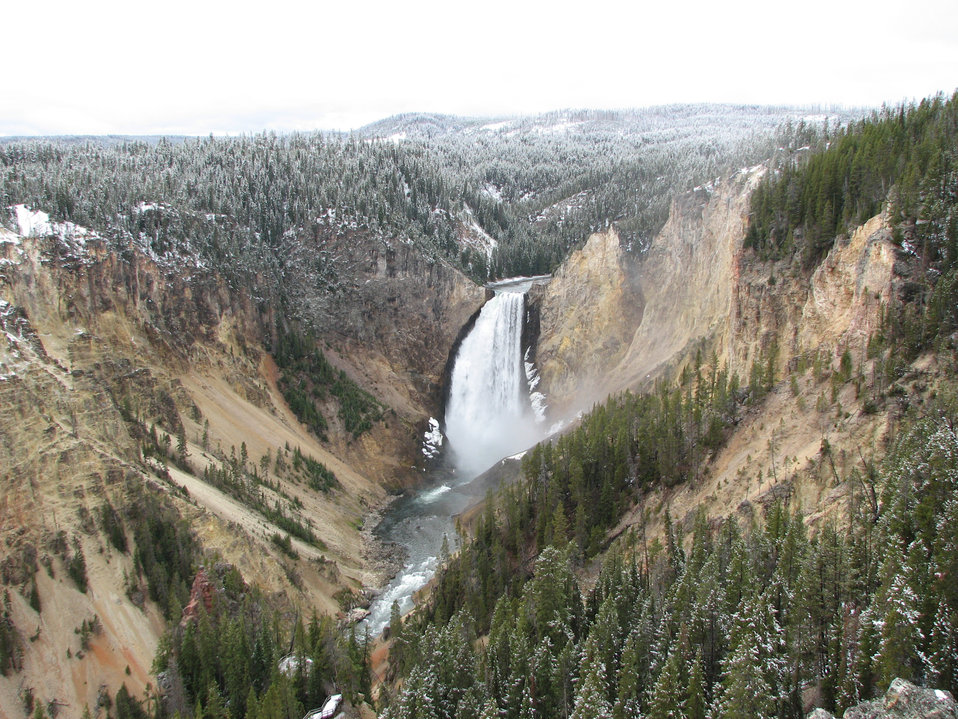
Perkins wow

Streamflow in the West consists largely of accumulated mountain snow that melts and flows into streams as temperatures warm.